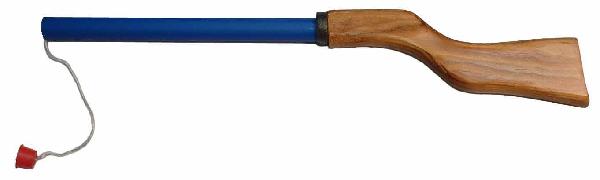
Pop Gun Cork